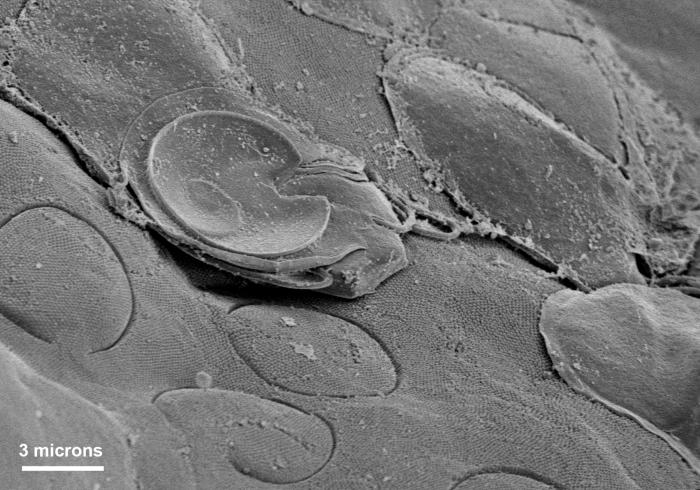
This scanning electron micrograph (SEM) revealed the presence of circulars lesions that were left on the intestinal surface, as a result of the tight adhesion produced by the ventral adhesive disk of Giardia sp. intestinal protozoa. The dorsal, or upper surfaces of several trophozoites could be seen in this figure, but the protozoan in the center of the photograph is laying upside-down, on its dorsal side, revealing an example of the ventral adhesive disk responsible for the circular lesions.